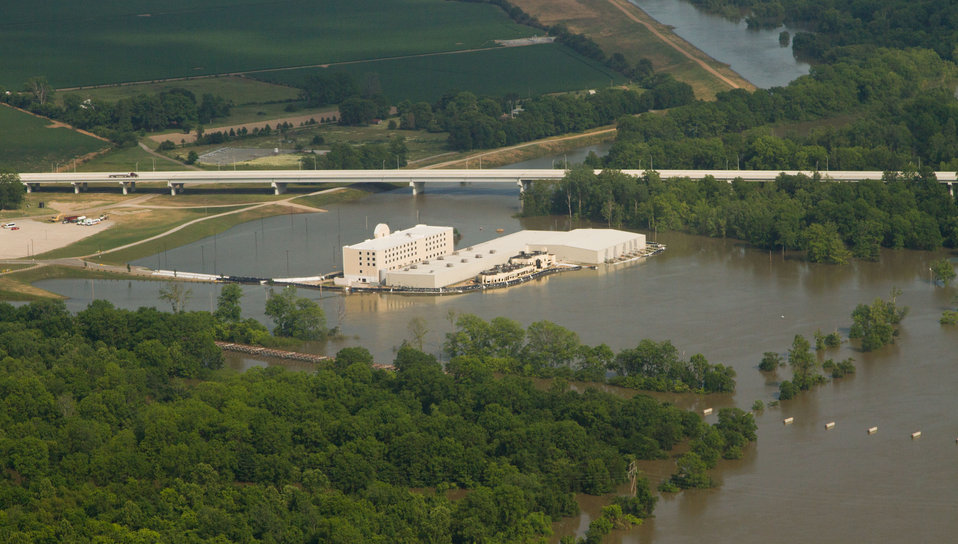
Aerial view of the Greenville Bridge spanning the Mississippi River at flood levels, on Thursday, May 19, 2011. Riverfront in Greenville, Mississippi avoided major damage with temporary levees around specific structure. The aerial platform was a UH-60 Blackhawk commanded by Col. Kennedy and his flight crew from the Army Aviation Support Facility #1 at Hawkins Field in Jackson.